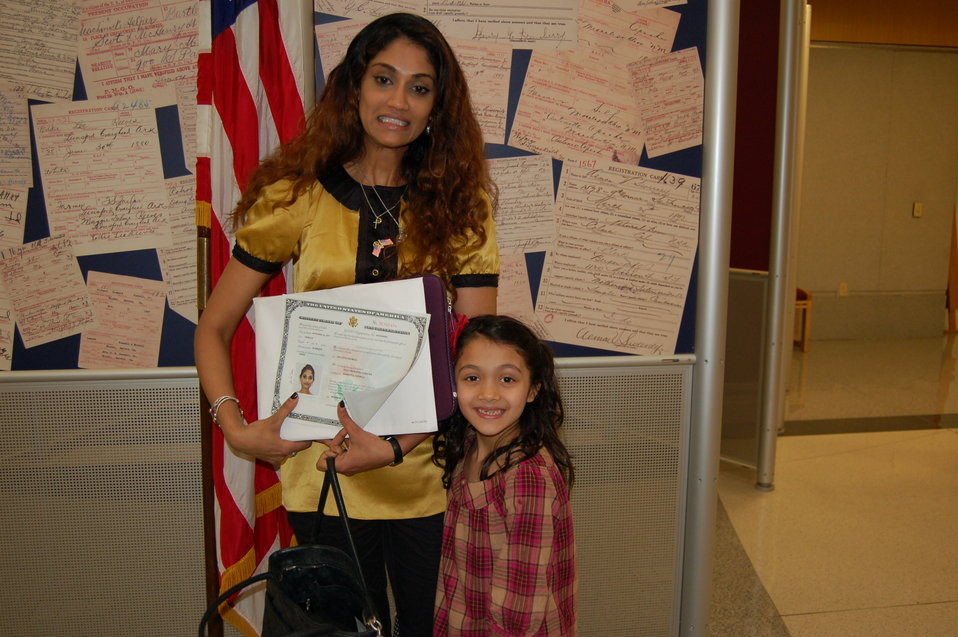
New Citizens